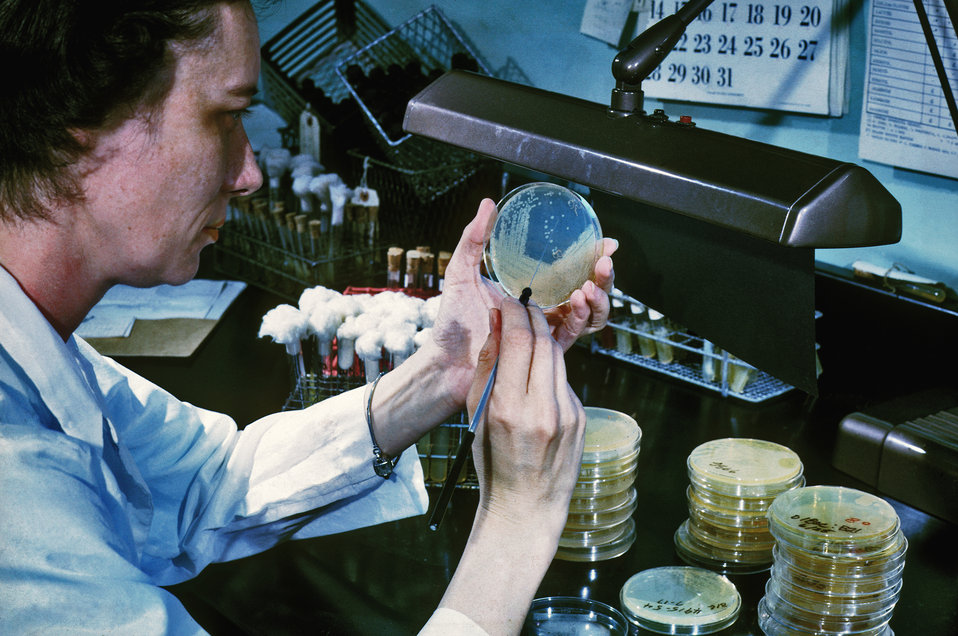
This Centers for Disease Control laboratorian was photographed while isolating Salmonella, Shigella or E. coli from a fecal specimen on an agar medium.